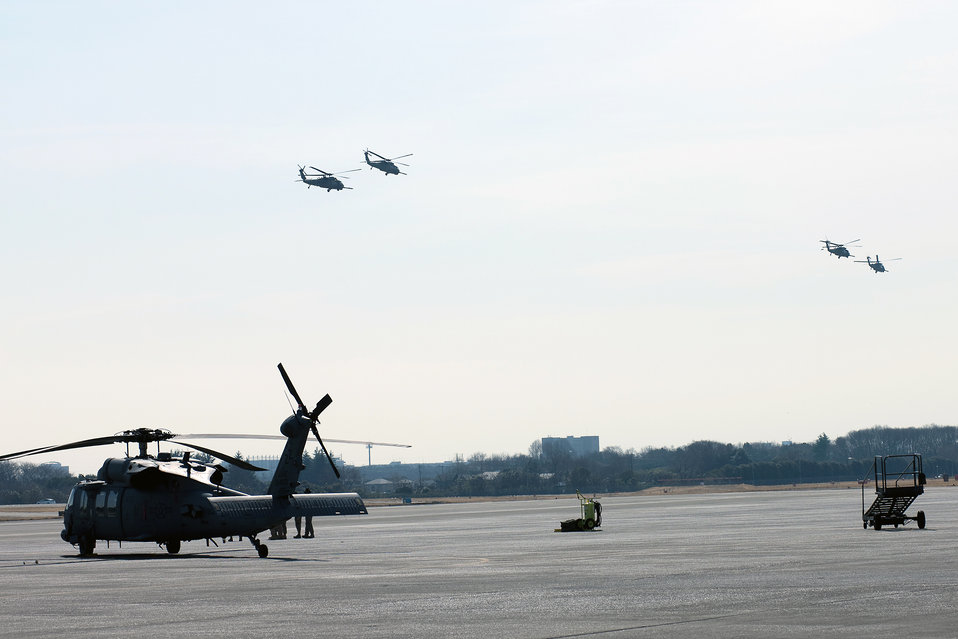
Earthquake and tsunami recovery effort

A joint team of U.S. Air Force and Marine search and rescue members boards a U.S. Air Force HH-60 Pave Hawk helicopter at Yokota Air Base, Japan, to participate in rescue missions March 14, 2011. Yokota is receiving personnel, aircraft and supplies to support search and rescue efforts as requested by the government of Japan.